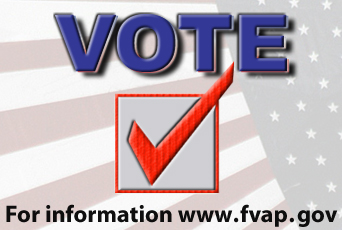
Servicemembers' right to vote comes with rules

All Airmen should exercise their right to vote!